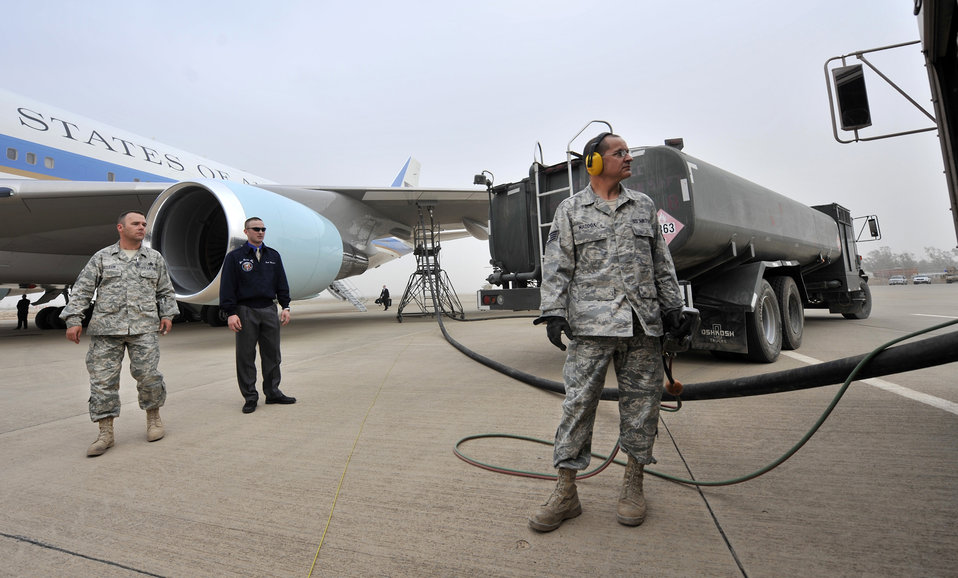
President Obama visits Sather

Staff Sgt. Donald Maddox refuels Air Force One on the flightline here while Master Sgt. Joel Sutton and an Air Force One crew chief stand ready to assist April 7 at Sather Air Base, Iraq. President Barack Obama landed here for an unannounced visit to Iraq. Sergeant Maddox is a 447th Expeditionary Logistics Readiness Squadron fuel distribution technician, and Sergeant Sutton is a 447th ELRS fuels manager.